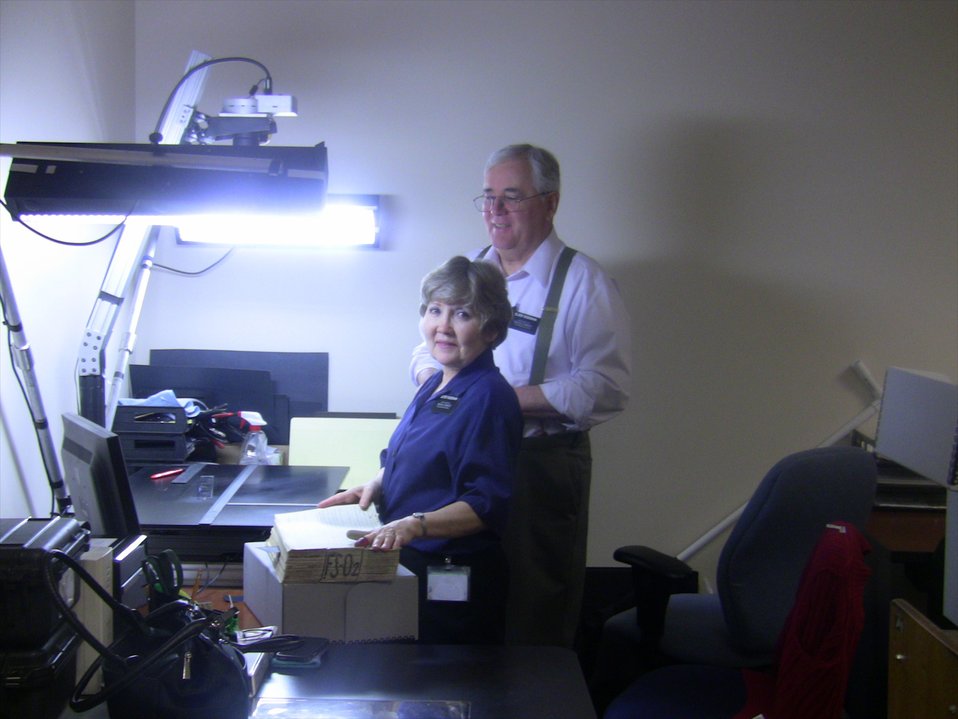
Family Search Volunteers Lee and Margo Rosenman digitizing RG 49 holdings; Location: National Archives at Denver, Broomfield, CO